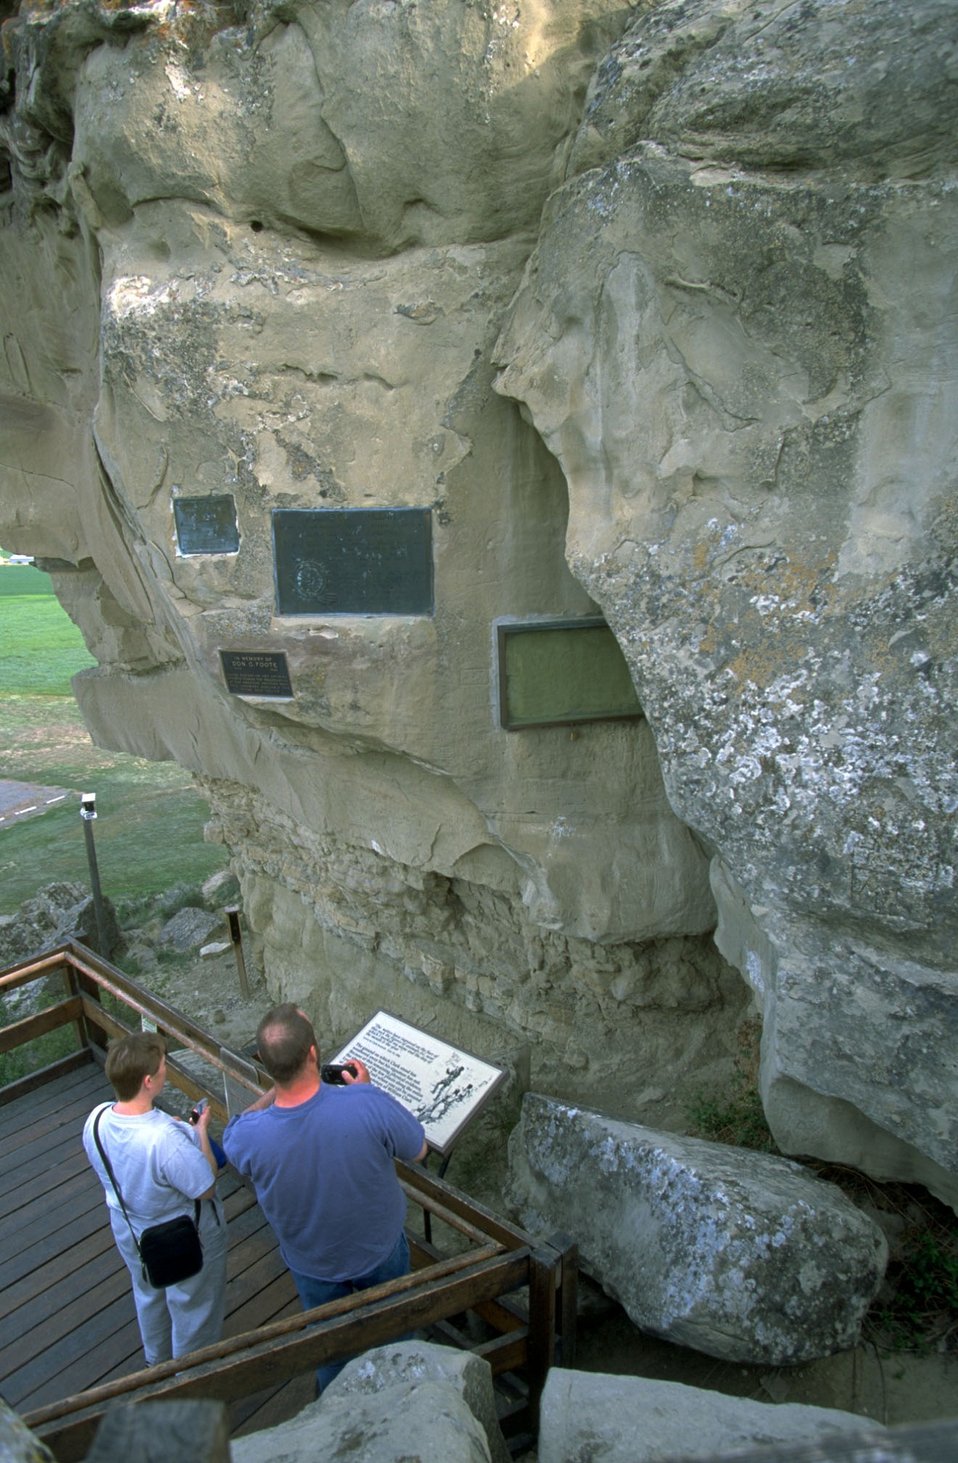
A couple looking at William Clark's signature (in black frame) on Pompeys Pillar National Monument